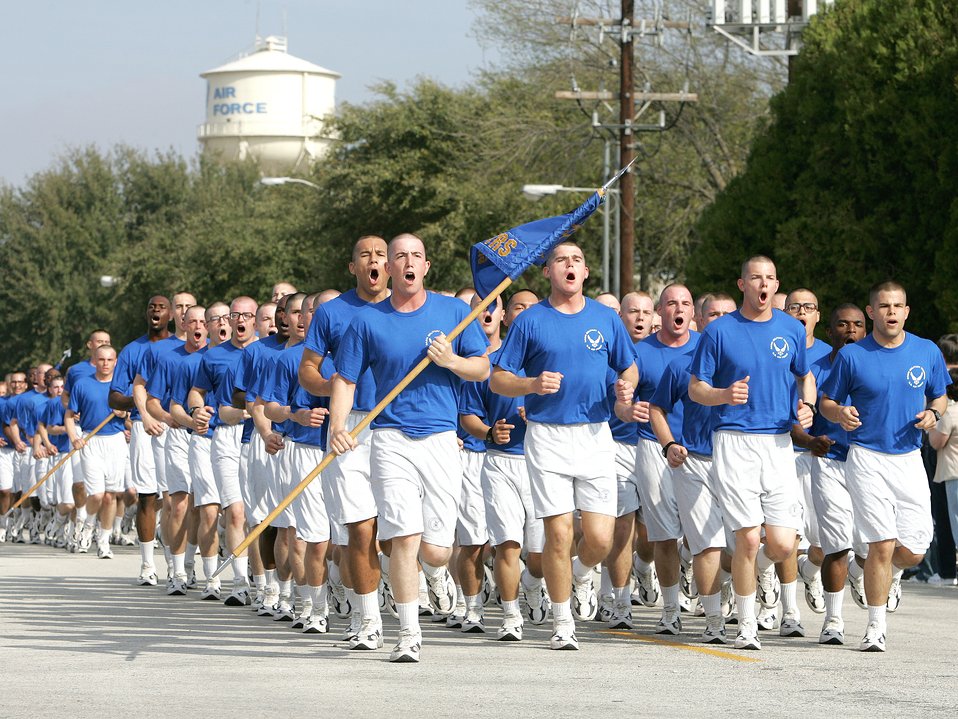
Airman's Run

Airmen with the 331st Training Squadron's Flight 217 sing cadence Thursday, March 2, 2006, as complete their last physical fitness requirement, a 2.5-mile run, before graduating March 3 from basic military training at Lackland Air Force Base, Texas.